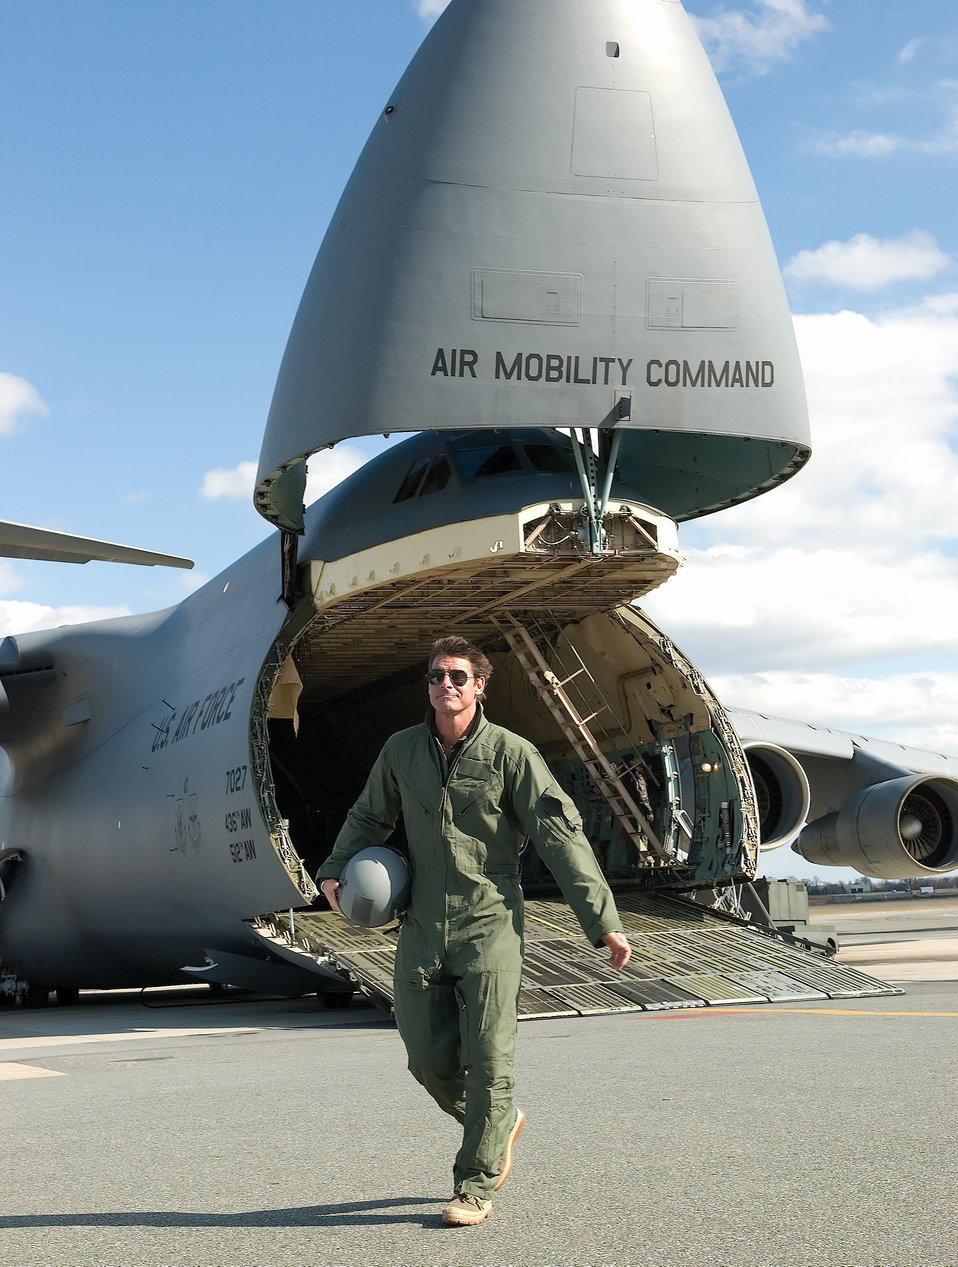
'Extreme Makeover' films at Dover

Ty Pennington, host of